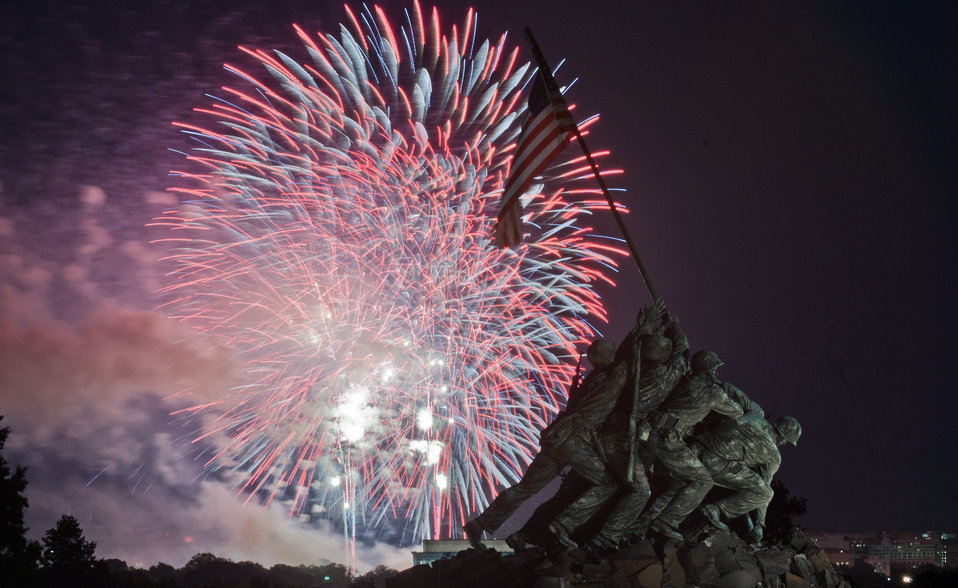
Independence Day celebration fireworks are seen from the Iwo Jima, U.S. Marine Corps Memorial in Arlington, VA on Jul. 4, 2013. In the distance are the Lincoln Memorial, the U.S. Department of Agriculture (USDA) Yates Building (dark red brick building), the Washington Monument (with scaffolding), and the U.S. Capitol building in Washington, D.C.